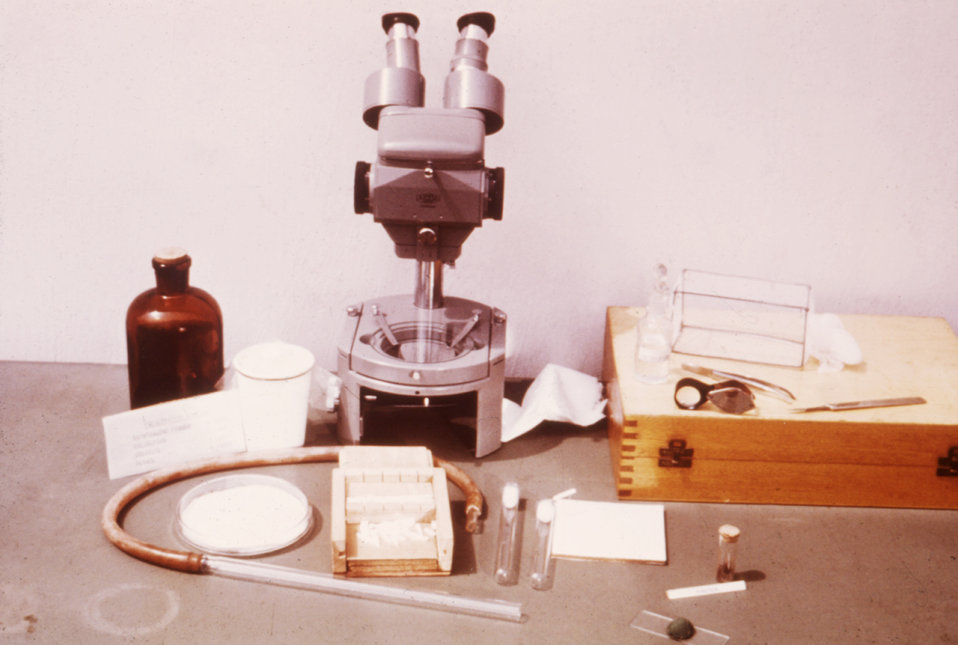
This image depicts the equipment necessary in the preparation of mosquitoes for mounting.